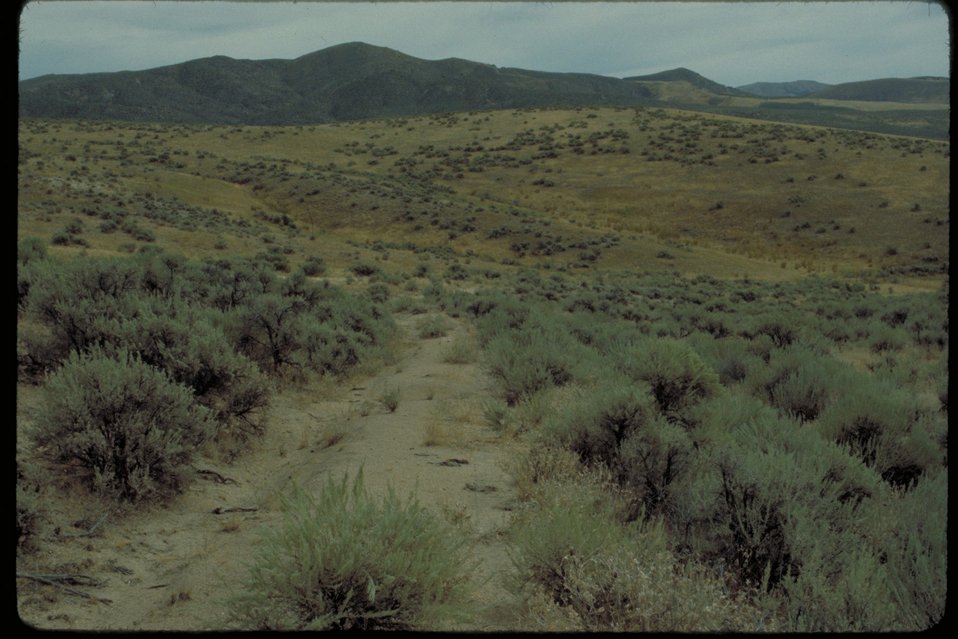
Oregon Trail North of Mountain Home Lower Snake River District